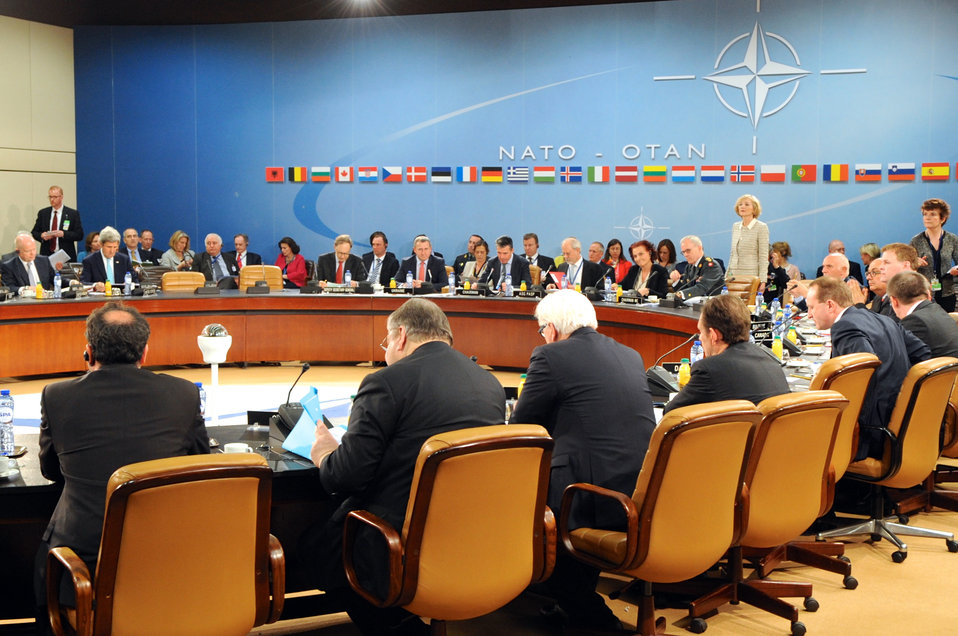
Secretary Kerry, Fellow Foreign Ministers Meet for NATO-Ukraine Commission Meeting In Brussels

U.S. Secretary of State John Kerry and his fellow foreign ministers meet for a NATO-Ukraine Commission Session at NATO Headquarters in Brussels, Belgium, on April 1, 2014.